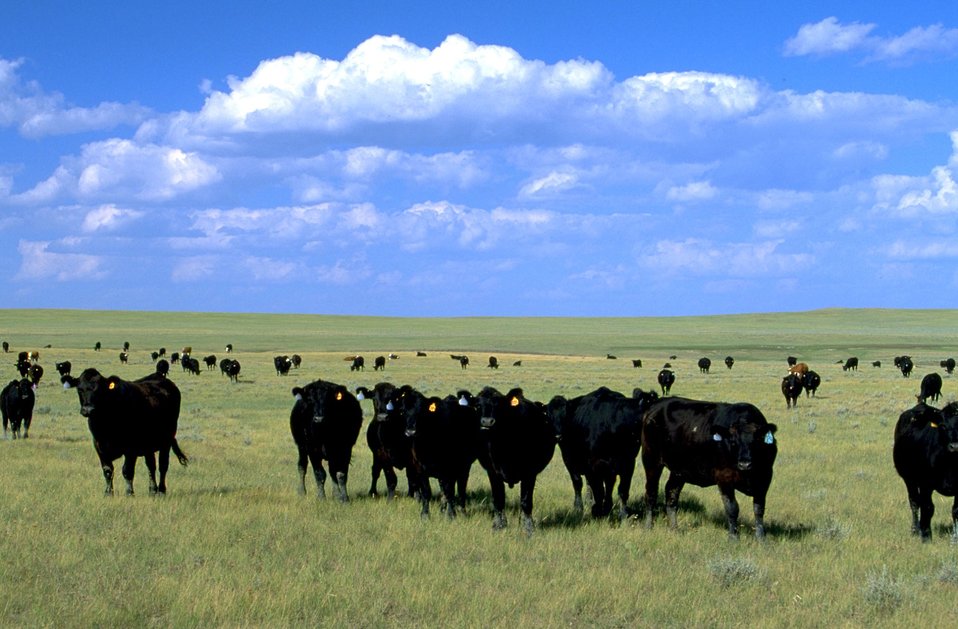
Yearling Cows on summer Range with Battle Creek in the background